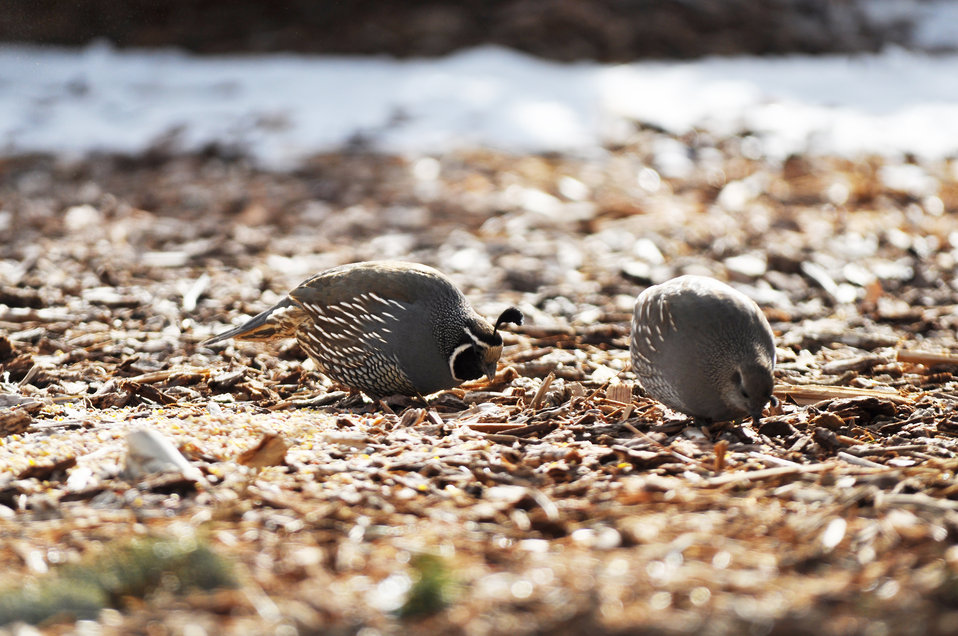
California quail photos taken in Gardnerville, NV